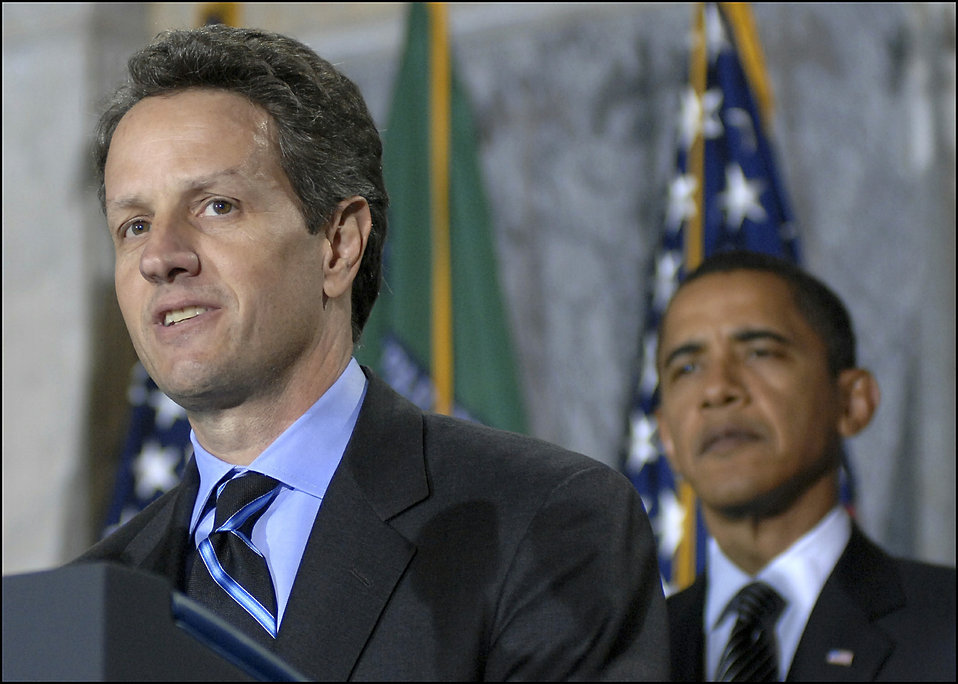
Secretary Geithner remarks at his swearing-in ceremony

Secretary Geithner speaking at his swearing in ceremony on January 26, 2009 in the Cash Room at the Department of the Treasury.